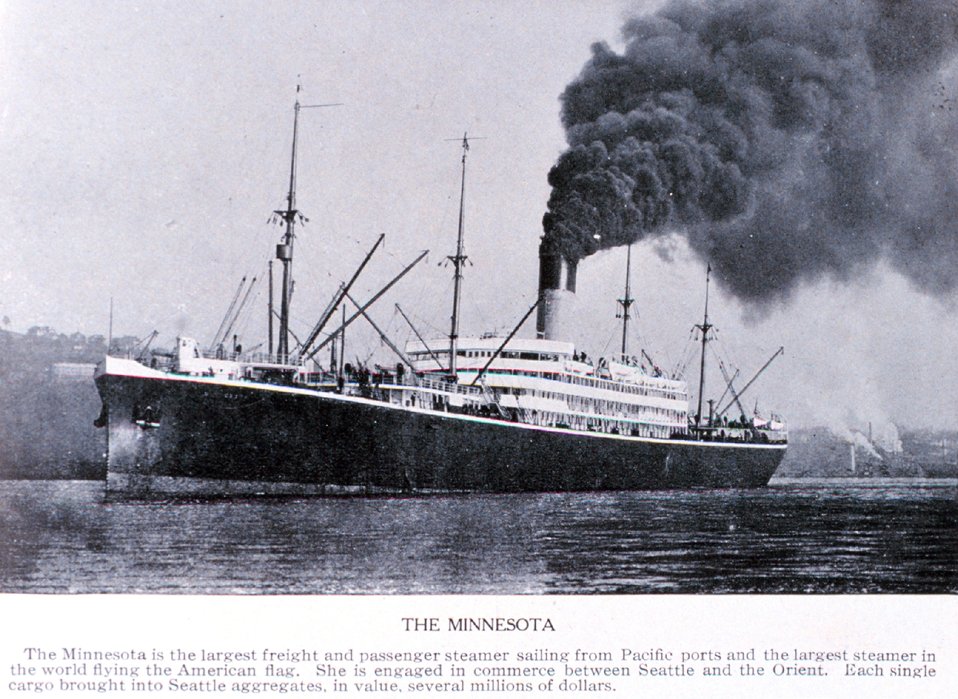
'The MINNESOTA'in Puget Sound. This vessel was the largest United States merchant vessel at the time this photograph was taken. In: 'Puget Sound and Western Washington Cities-Towns Scenery', by Robert A. Reid, Robert A. Reid Publisher, Seattle, 1912. P. 69.